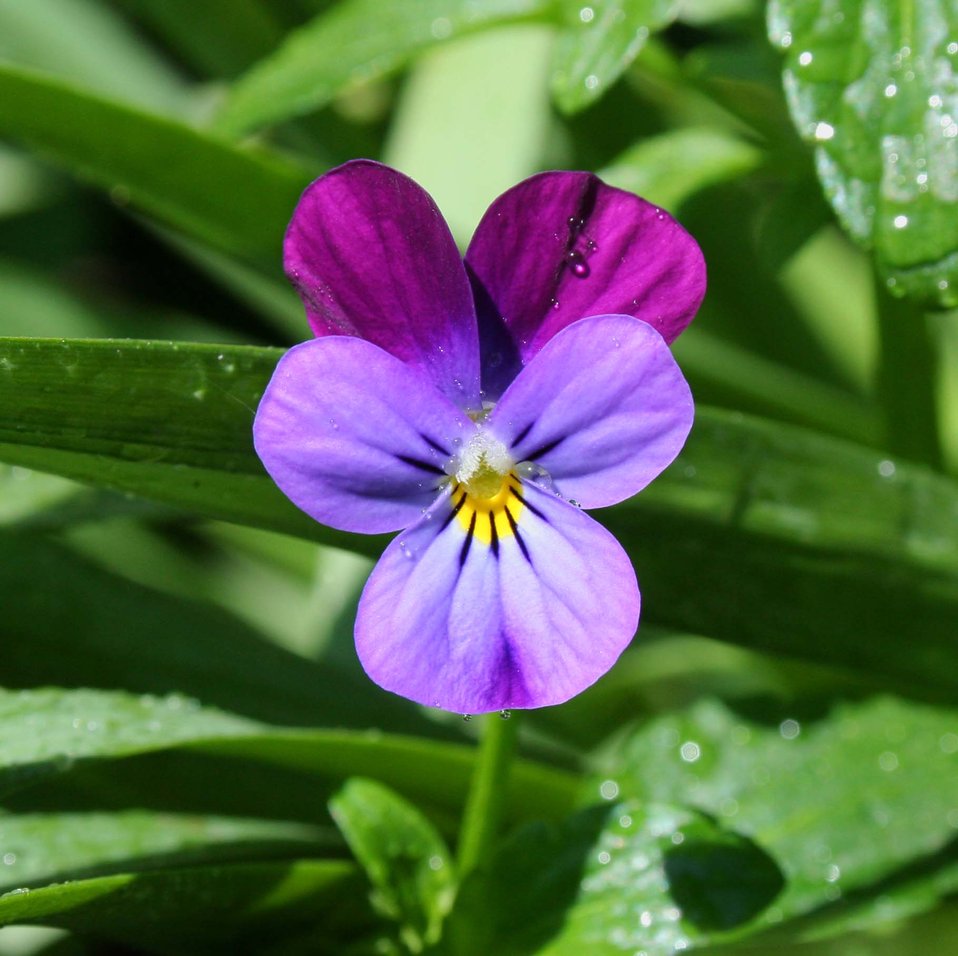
Violaceae Magyar: Ibolyafélék szemből - Nr. 002